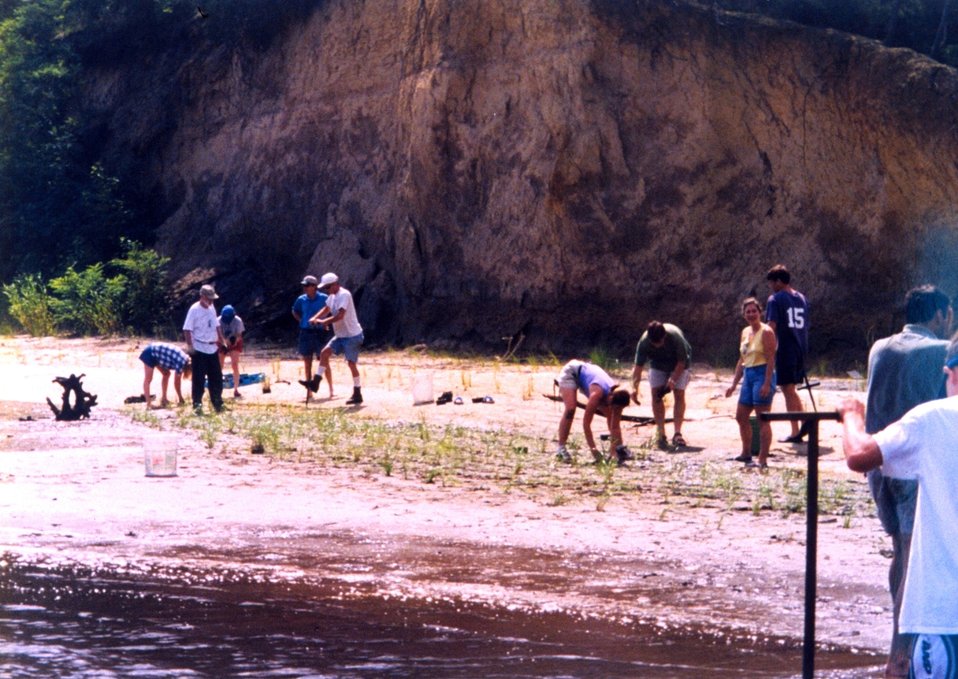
Replanting marsh grass in an effort to protect and rebuild this beach near Annapolis.